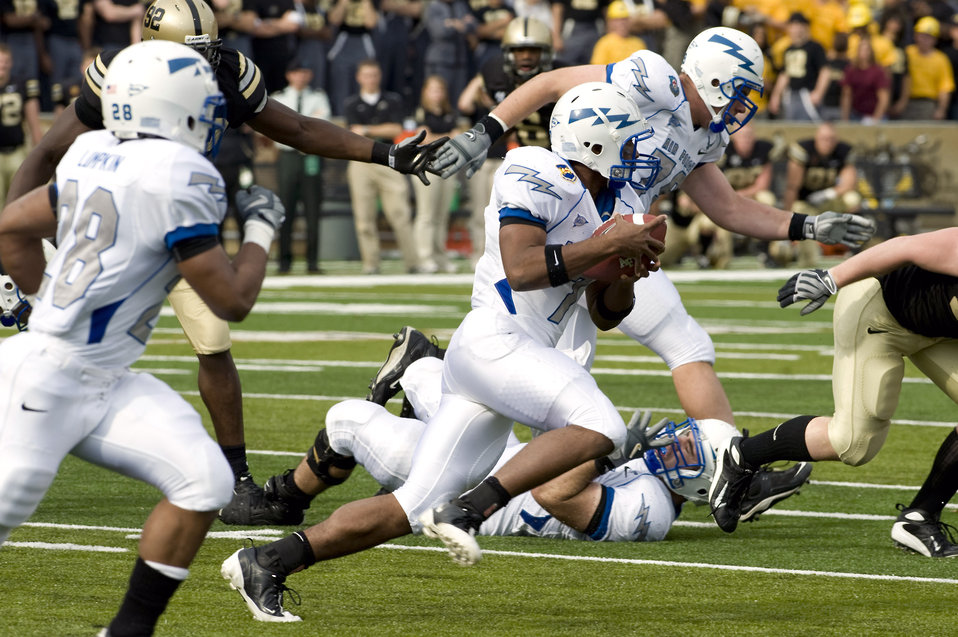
Football: Falcons top Army in slugfest

U.S. Air Force Academy quarterback Tim Jefferson keeps the football and attempts to run for the first down in their 16-7 defeat of the U.S. Military Academy Nov. 1 at West Point, N.Y.